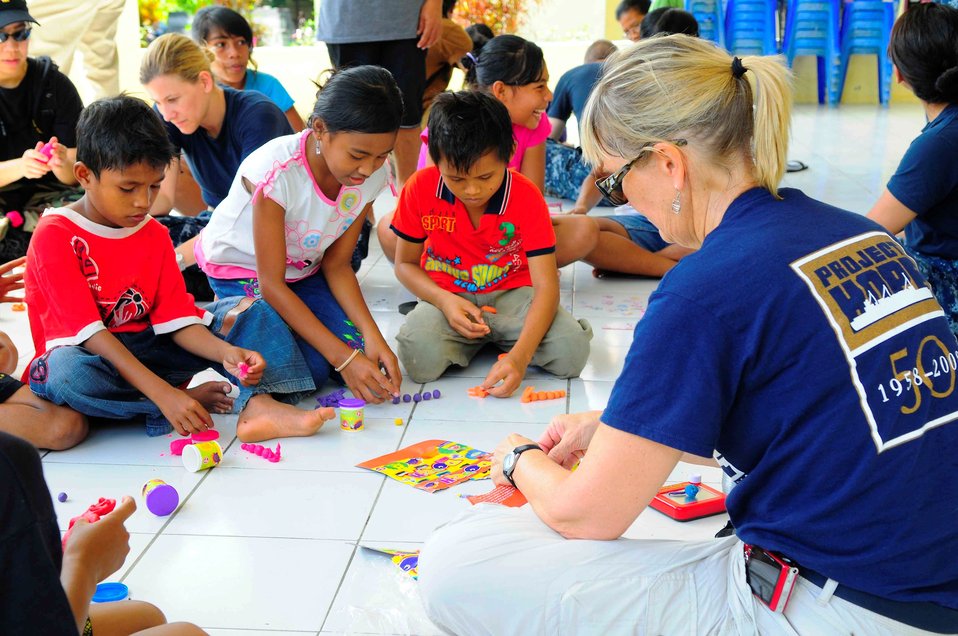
Project HOPE Volunteer Kathryn Allen Makes Clay Sculptures With Indonesian Children

Project HOPE volunteer Kathryn Allen, embarked aboard the Military Sealift Command hospital ship USNS Mercy (T-AH 19), makes clay sculptures with children during a community service event at the Rumah Sejahtera Bagi Anak Orphanage, in support of Pacific Partnership 2010 in Tobelo, Indonesia, on July 14, 2010. Pacific Partnership 2010 is the fifth in a series of annual U.S. Pacific Fleet endeavors conducted in Indonesia as a disaster relief exercise to strengthen regional partnerships.